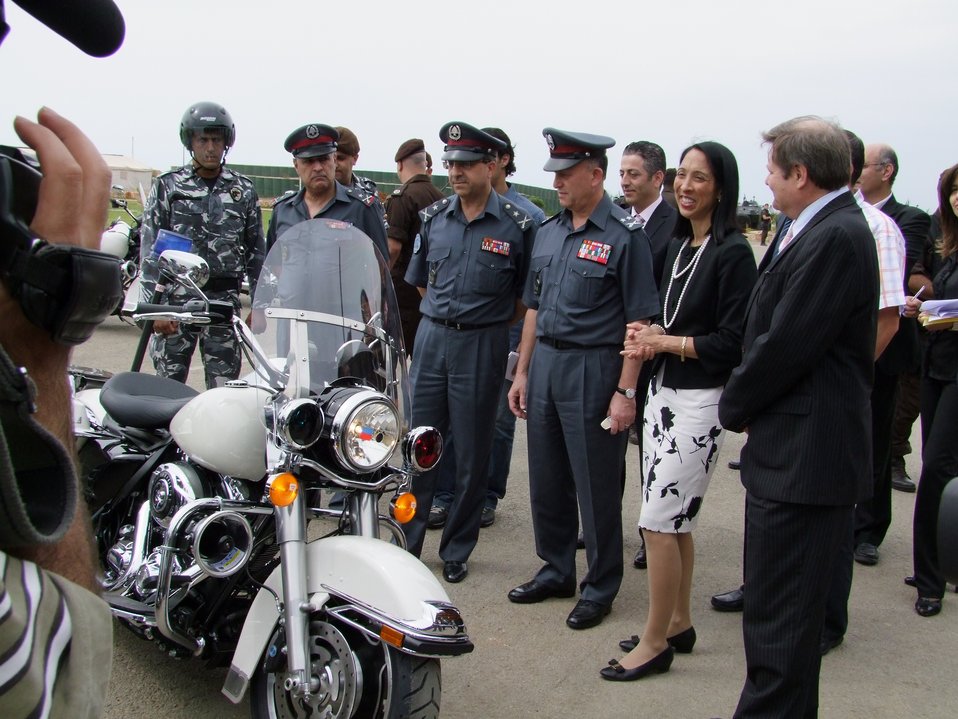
Ambassador Sison Inspects a New Harley Davidson Police Motorcycle

U.S. Ambassador to Lebanon Michele J. Sison (second from right) inspects a new Harley Davidson police motorcycle with Lebanese ISF commanders at the U.S. Embassy Beirut, May 18, 2010.